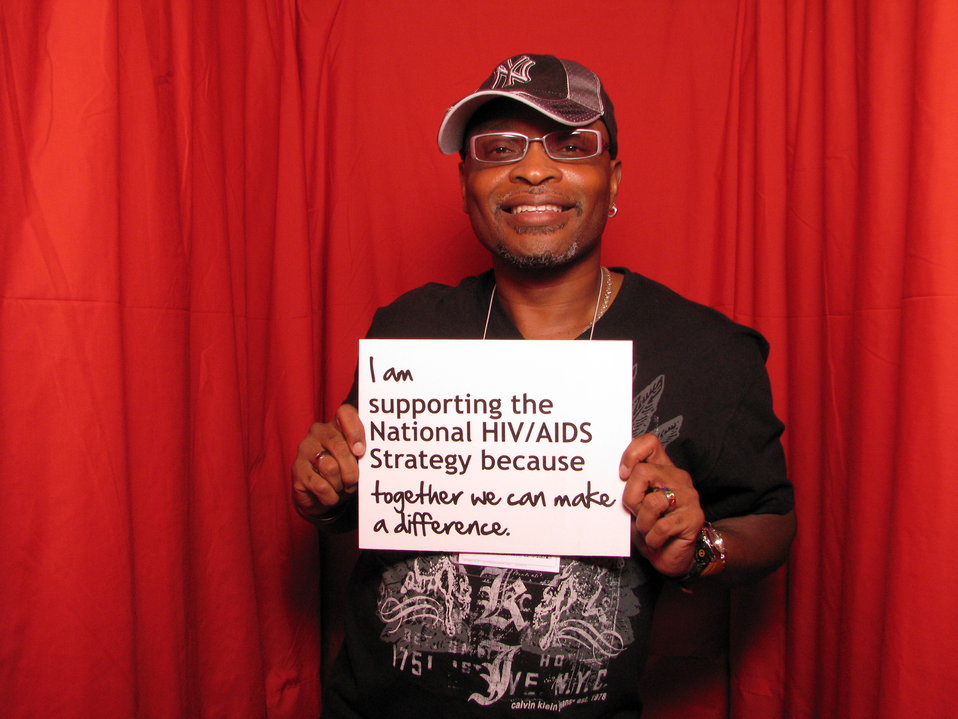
I am supporting the National HIV/AIDS Strategy because together we can make a difference.

From the AIDS.gov photo booth at the U.S. Conference on AIDS, September 2010 (Orlando, FL).